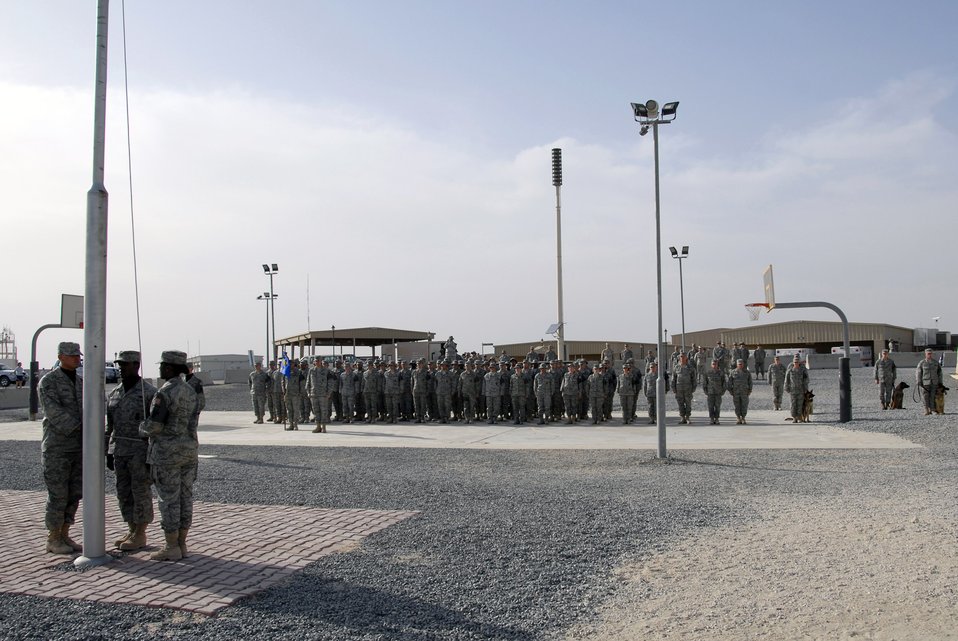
Airmen honor fallen comrades

Airmen from the 386th Expeditionary Security Forces Squadron stand at attention in an expedited retreat ceremony during National Police Week May 16 at an air base in Southwest Asia. The 386th ESFS members commemorated National Police Week May 11 through 17 hosting a series of events to celebrate the memory of their fallen comrades.